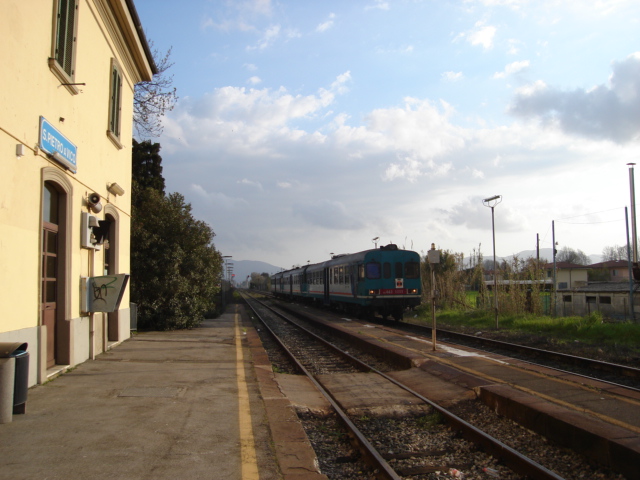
Italiano: stazione di San Pietro a Vico